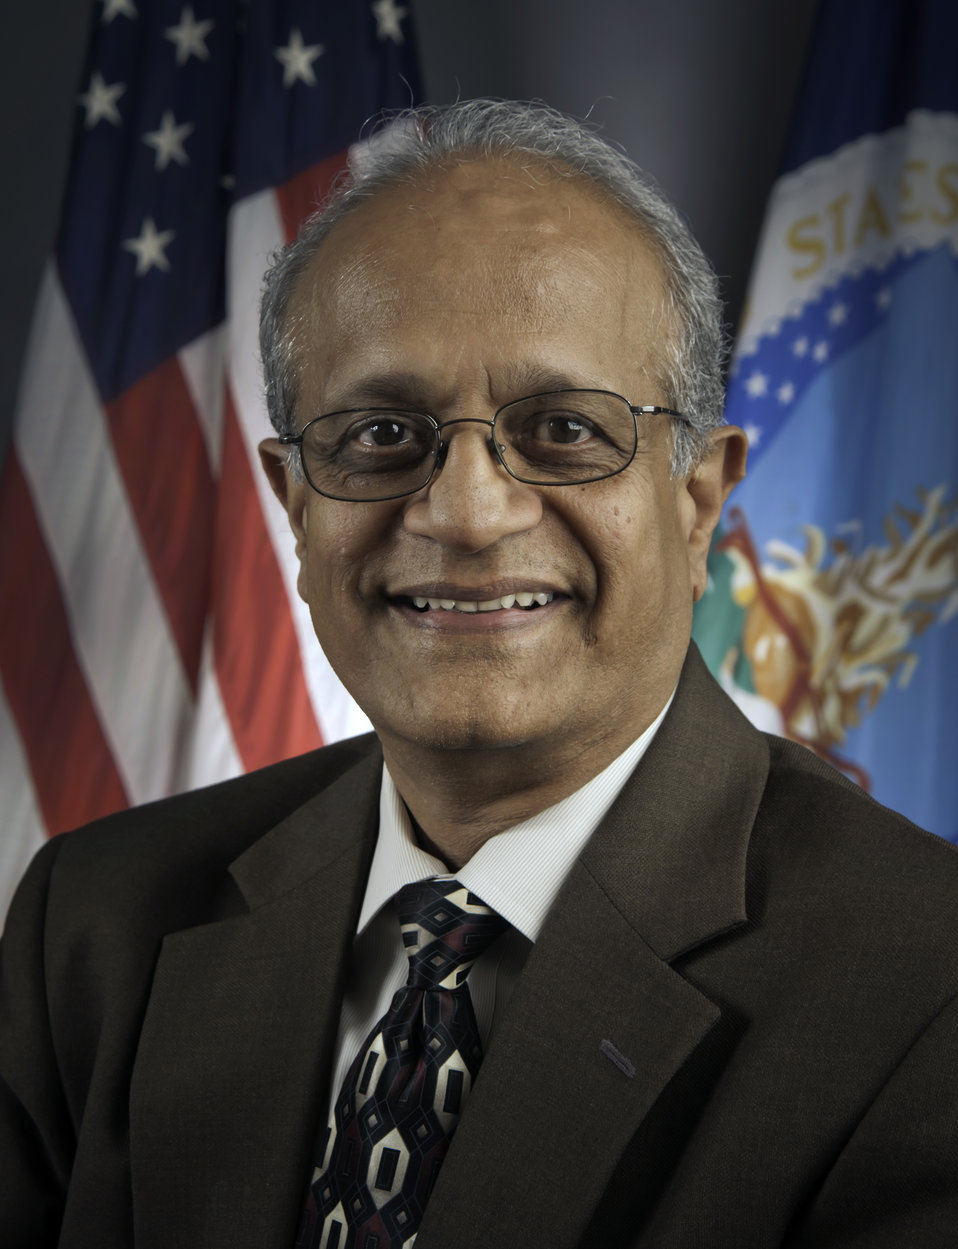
20120522-NIFA-RBN-6045 National Institute of Food and Agriculture Director Dr. Sonny Ramaswamy

National Institute of Food and Agriculture Director Dr. Sonny Ramaswamy.